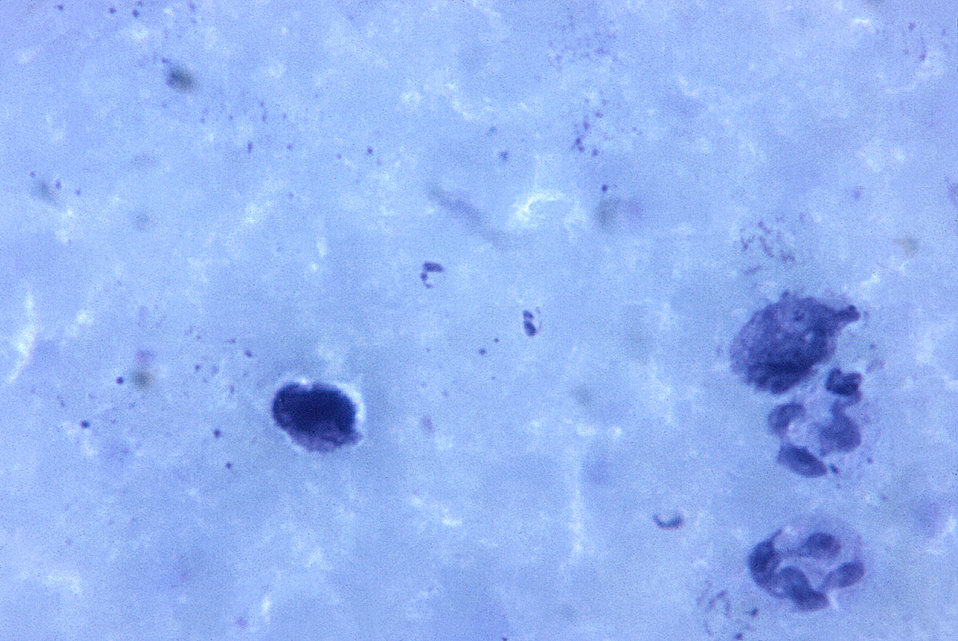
This Giemsa stained micrograph is an example of the phenomenon known as 'incomplete dehemoglobinization'.